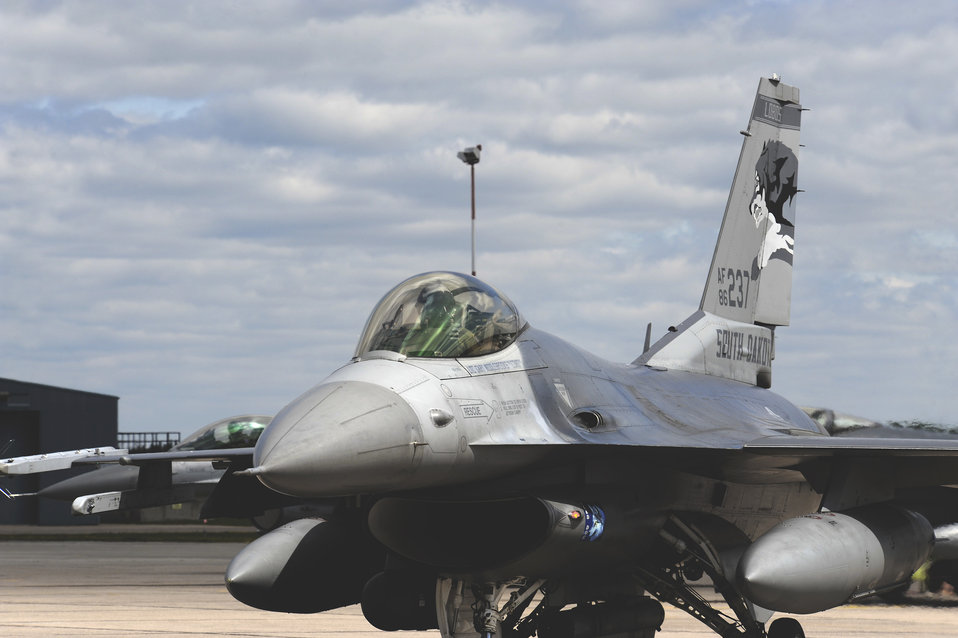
Maple Flag 42

An F-16 Fighting Falcon, assigned to the 175th Fighter Squadron, Sioux Falls, S.D. Air National Guard, taxis out for a training mission during exercise Maple Flag 42 at 4 Wing Cold Lake, Canada, June 4. Maple Flag is a Canadian-sponsored and Air Combat Command supported exercise that provides aircrews simulated air and ground combat training to coalition forces in a NATO environment.